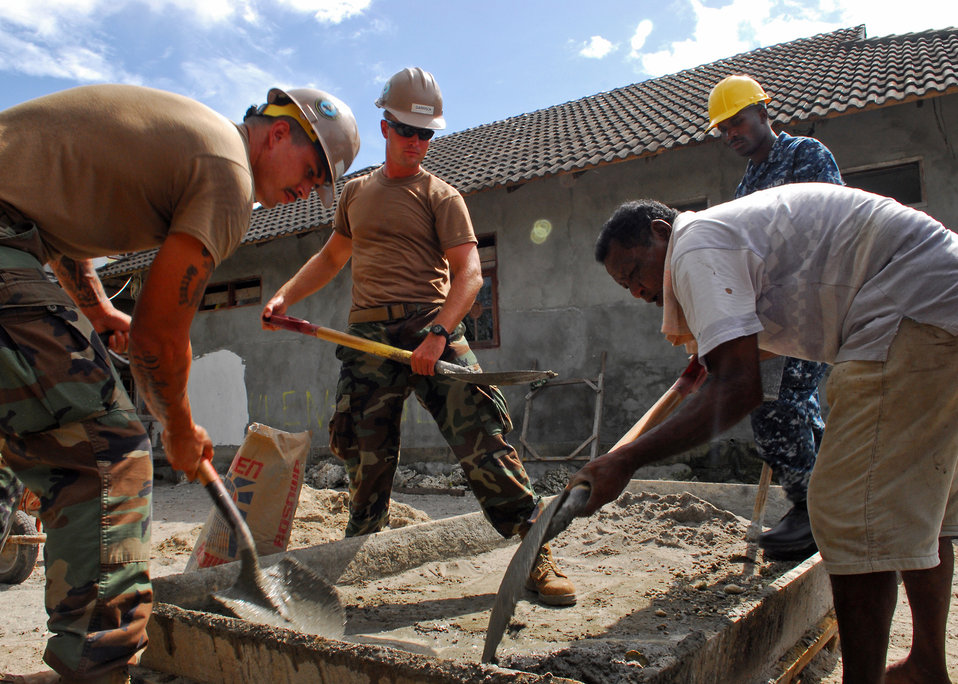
Seabees and an Indonesian Volunteer Mix Concrete

U.S. Navy Seabees from Amphibious Construction Battalion (ACB) 1, currently aboard the Military Sealift Command hospital ship USNS Mercy (T-AH 19), and an Indonesian volunteer mix concrete during an engineering civic action program. Mercy is in Ambon participating in Sail Banda 2010. Mercy’s participation features medical and dental care clinics and construction projects in and around Ambon, as well as on Seram Island.